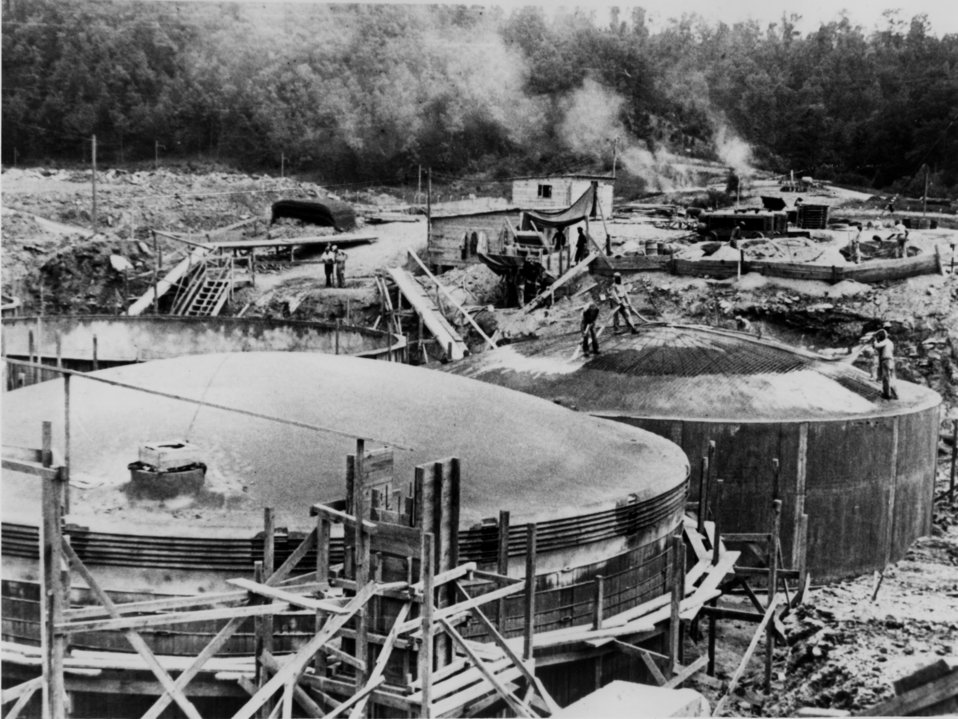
1

Histy141 file# 64 7/14/43
ORNL Histy 141
This photo was taken duing construction of the Gunite Tanks in the 40's